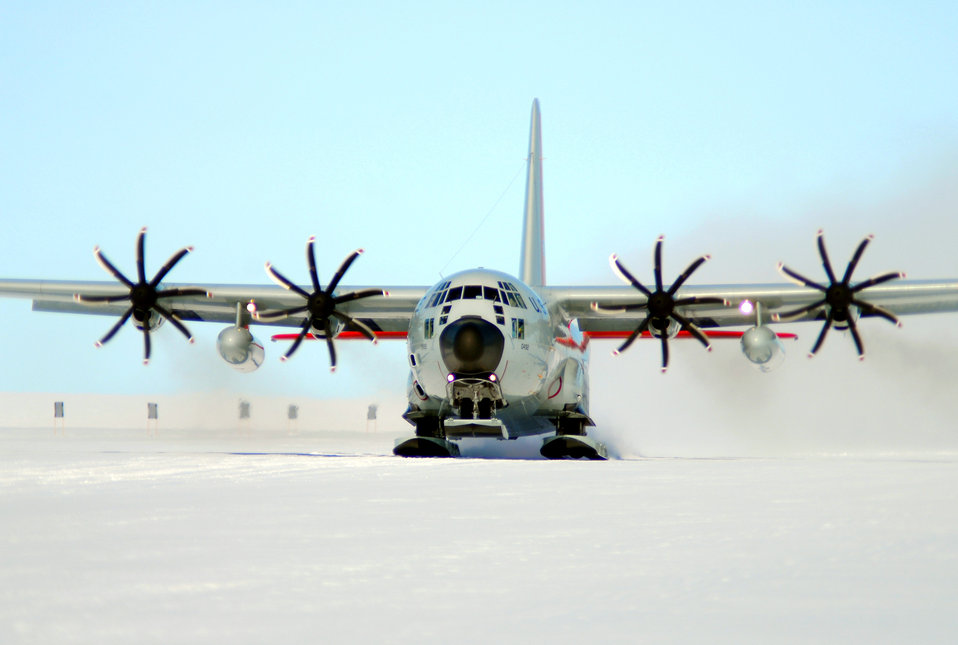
A runway like no other

A ski-equipped LC-130 Hercules from the New York Air National Guard's 109th Airlift Wing takes off Feb. 2, 2011, during an Operation Deep Freeze mission in Antarctica. The 109th AW, which participates in the Antarctic missions from Christchurch, New Zealand, is the only organization that flies the ski-equipped LC-130s.